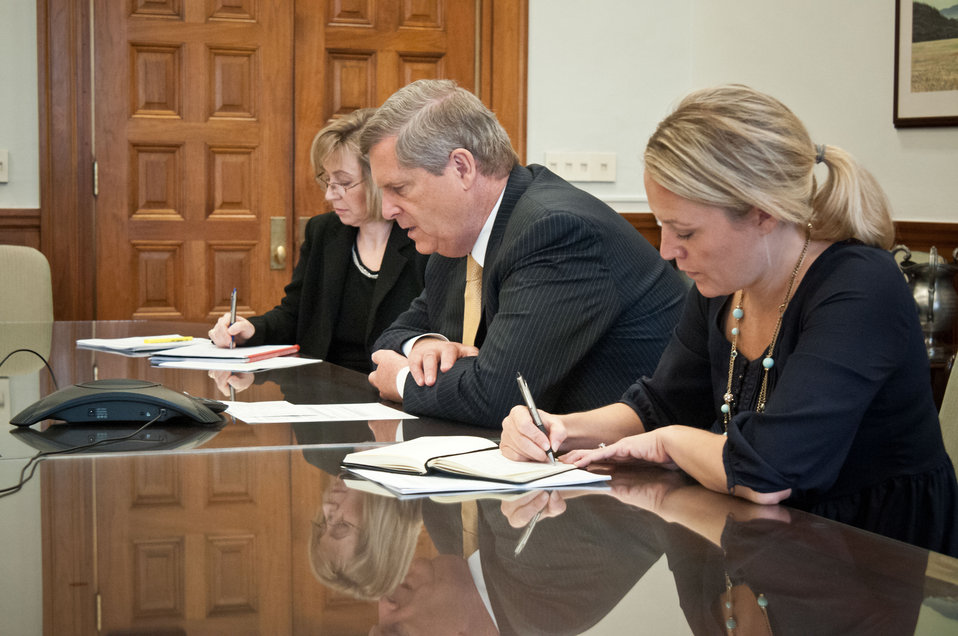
From left: Director, External and Governmental Affairs, Jennifer Yezak, Agriculture Secretary Tom Vilsack and Confidential Secretary, Lindsay Daschle held a conference call with Rural Council stakeholders to discuss the economy of rural America at the United States Department of Agriculture in Washington, D.C., onThursday, April 26, 2012.